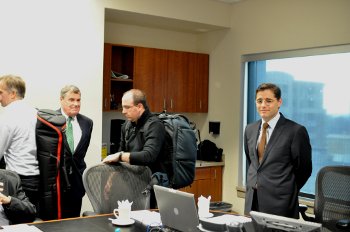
Next gen Chairman conference

Next Generation 9-1-1; Arlington, VA. November 23, 2010